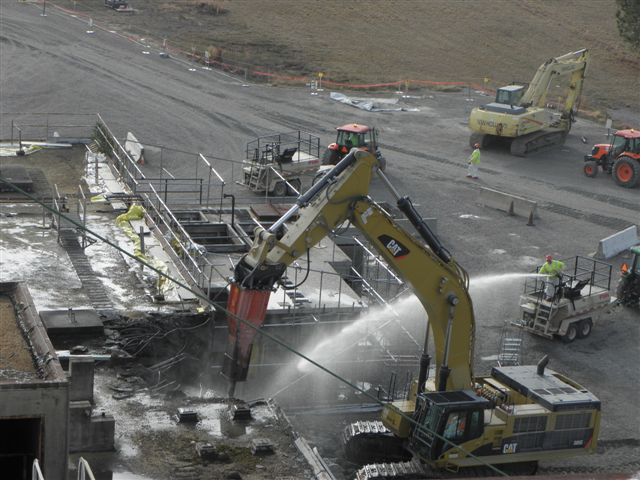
Demolition at 105-R Disassembly